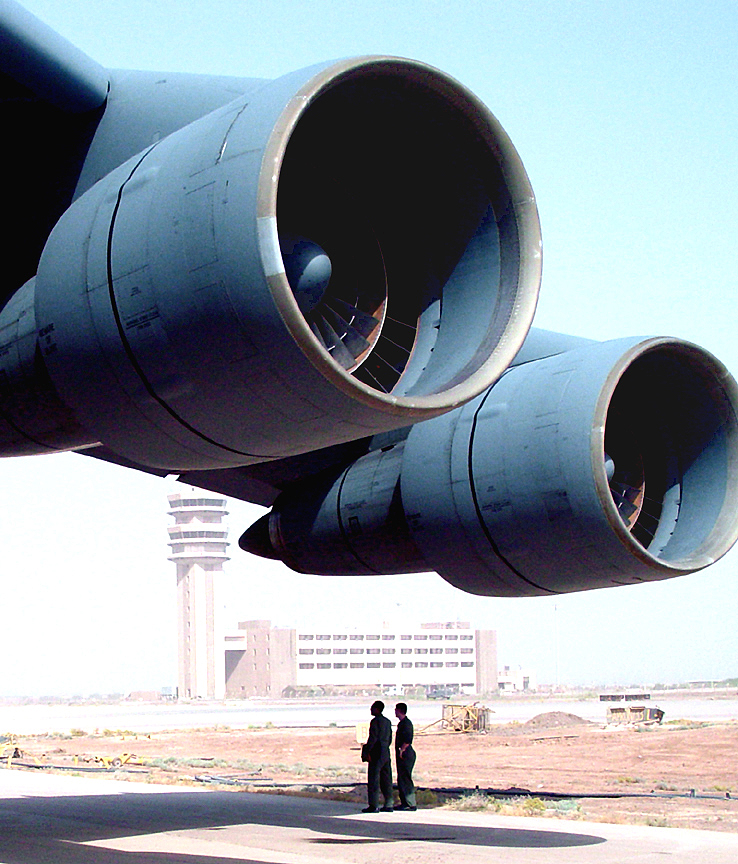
Big boys

BAGHDAD, Iraq -- Two airmen review a mission in the shade under the wing of a C-5 Galaxy sitting on the runway at Baghdad International Airport.